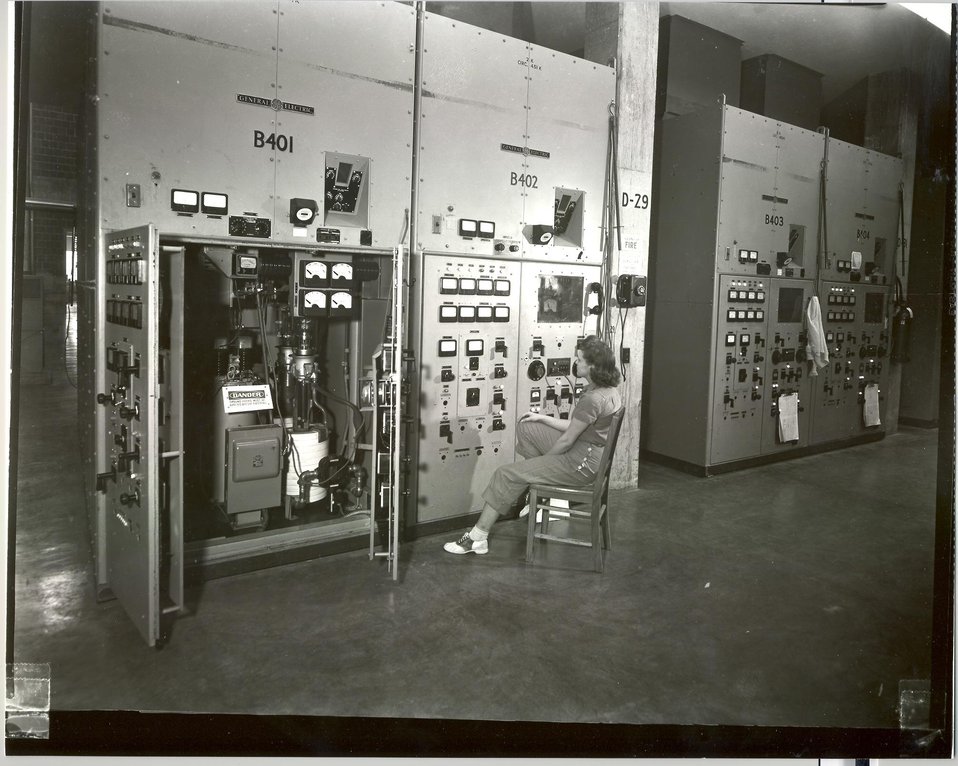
Woman Sitting at Beta Unit Control Panel